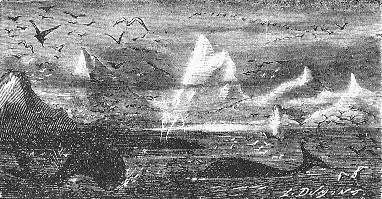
An illustration from Jules Verne's novel 'Journeys and Adventures of Captain Hatteras', part I: 'The English at the Noth Pole' drawn by Édouard Riou and/or Henri de Montaut. Polski: Ilustracja powieści Juliusza Verne'a 'Podróże i przygody kapitana Hatterasa', części I: 'Anglicy na Biegunie Północnym' autorstwa Édouarda Riou i/lub Henri de Montauta. Français : Jules Verne: 'Voyages et aventures du capitaine Hatteras - Les Anglais au Pôle Nord', Édouard Riou et Henri de Montaut.